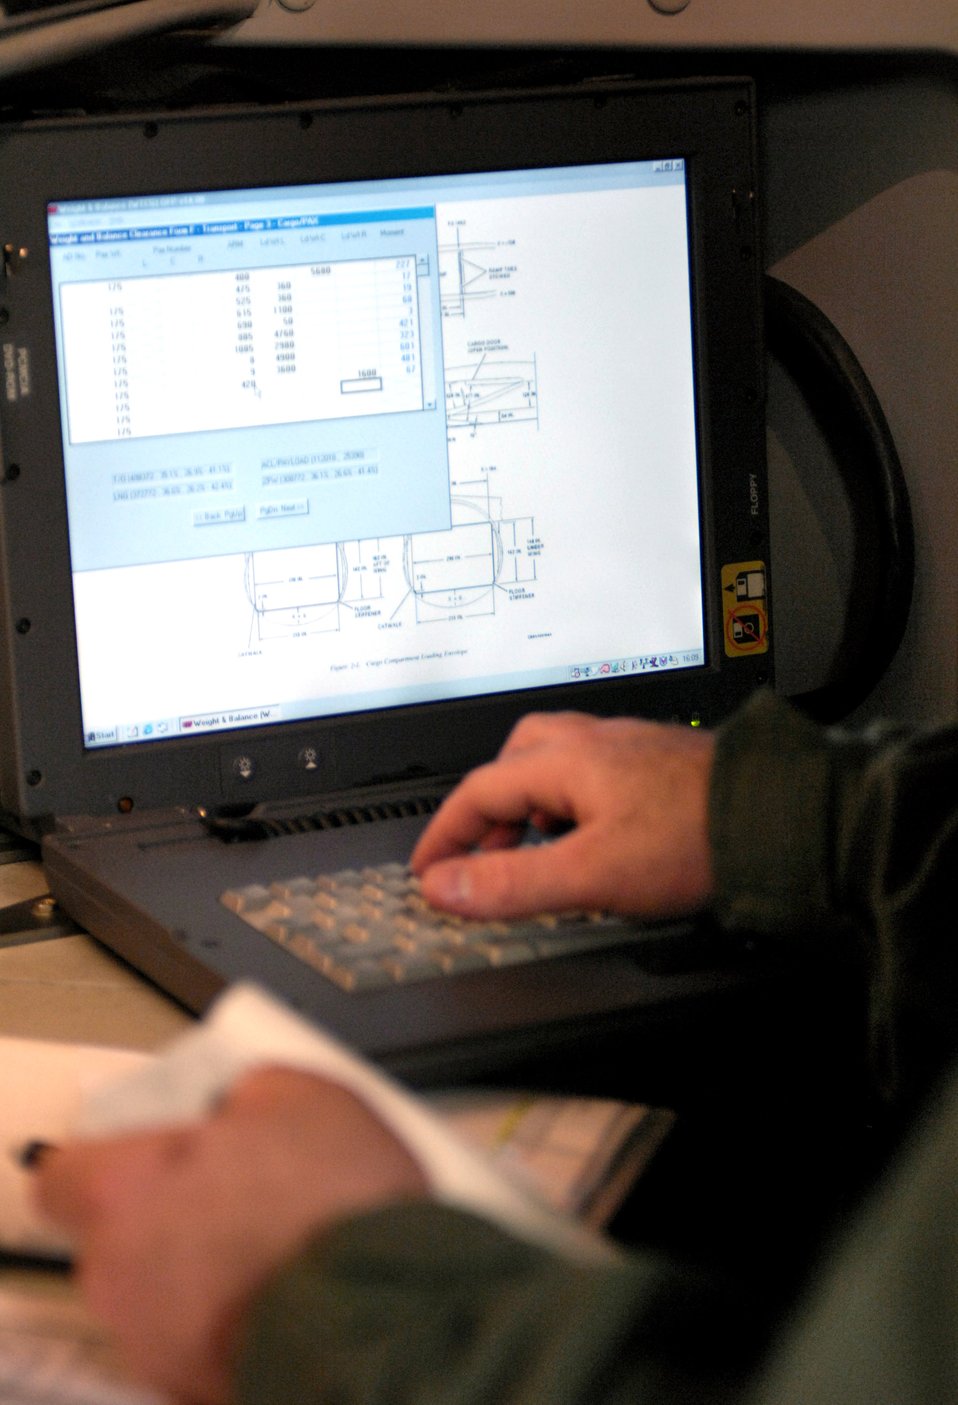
C-17 delivers strategic capability

Staff Sgt. Jason Scaffidi type in positions and weights of equipment loaded on a C-17 Globemaster III Jan. 25 at Hickam Air Force Base, Hawaii. Sergeant Scaffidi is a loadmaster with the 535th Airlift Squadron. The design of the aircraft allows it to operate through small, austere airfields.